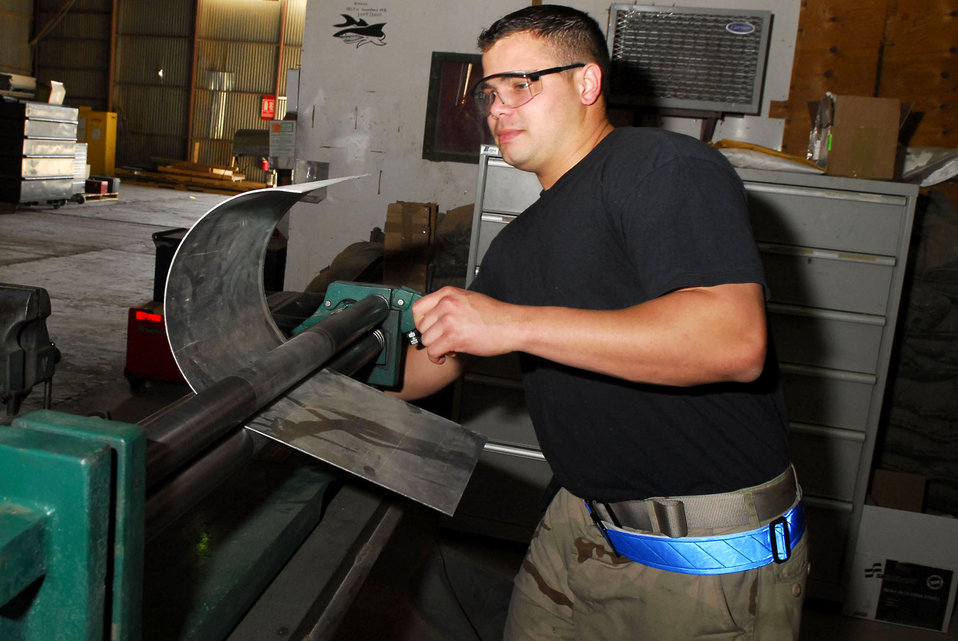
Fabricating the force

Staff Sgt. Adrian Lopez uses a metal roller to create a patch for an F-16 Fighting Falcon panel Nov. 14 at Balad Air Base, Iraq. The sheet fabrication flight creates metal pieces for all active-duty vehicles, including Army assets. Sergeant Lopez is a 332nd Expeditionary Maintenance Squadron aircraft structural maintainer and is deployed from Spangdahlem Air Base, Germany.